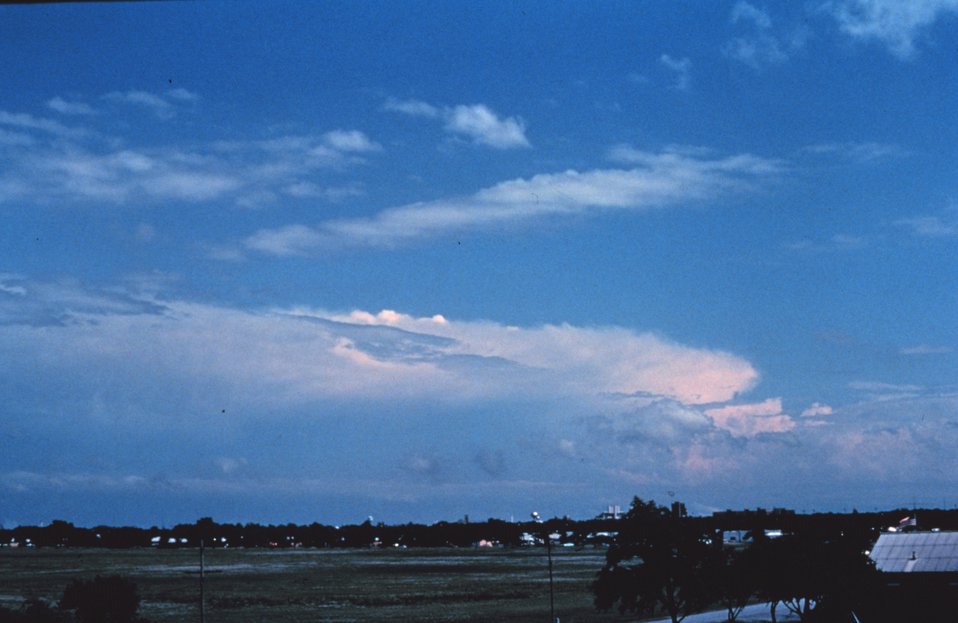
Isolated supercell south of Norman Ok. Photo taken from roof of NSSL.